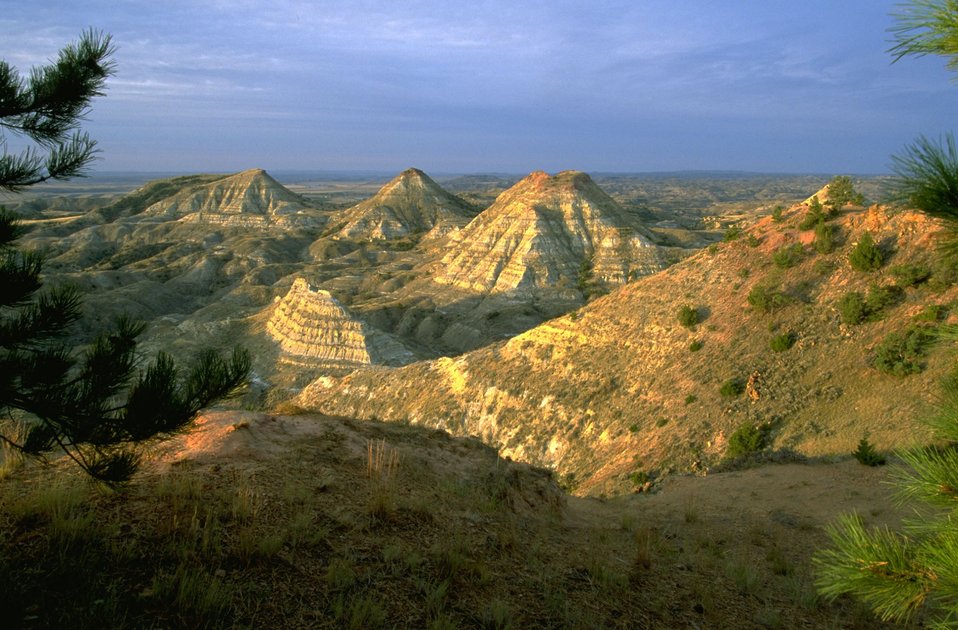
Terry Badlands Wilderness Study Area